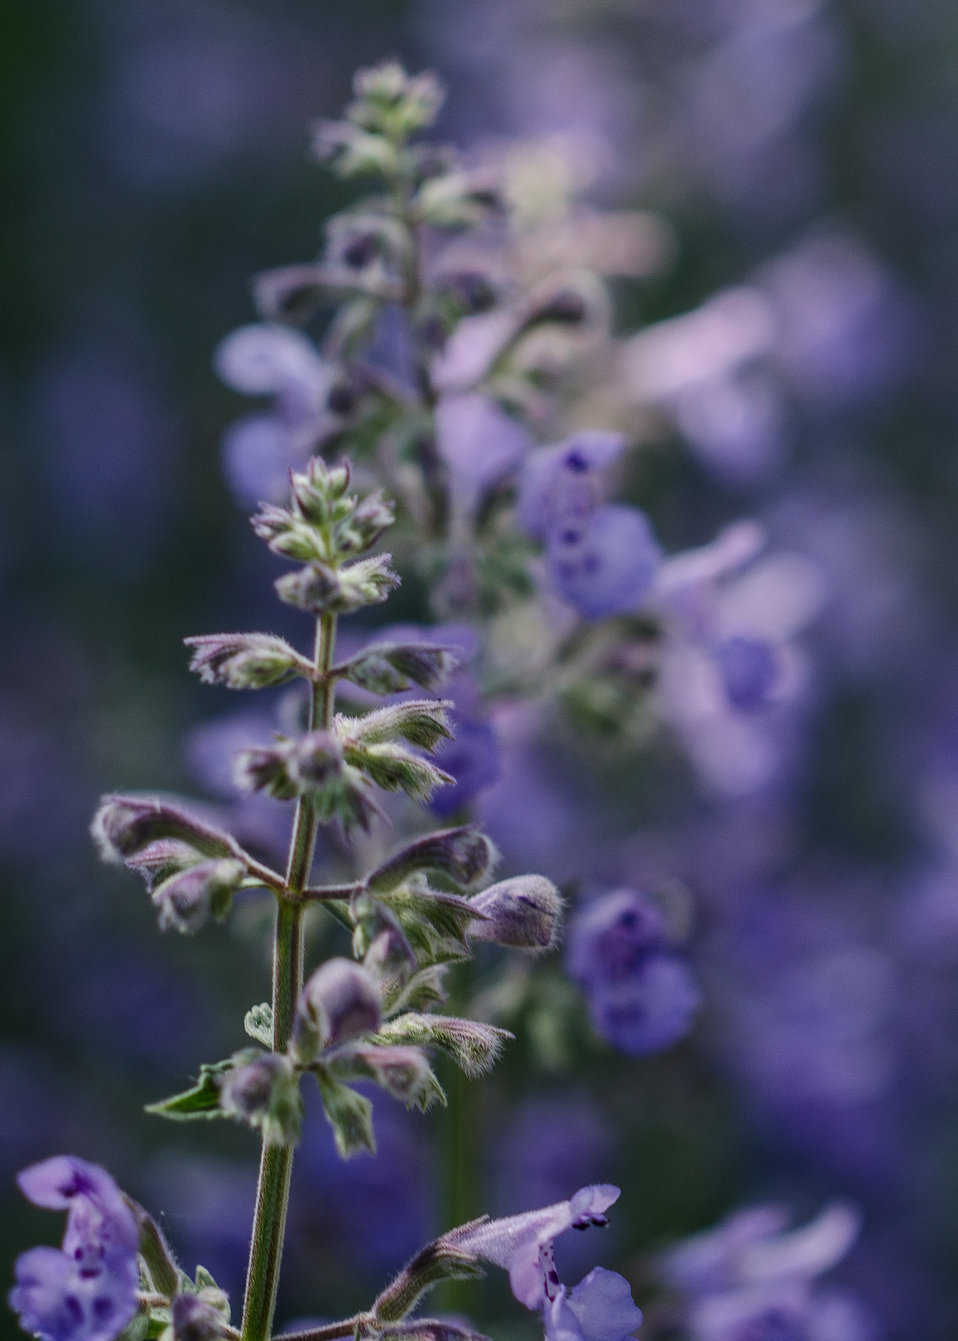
A honey bee is attracted to flowers in the U.S. Department of Agriculture People's Garden, outside the headquarters' Whitten Building in Washington, D.C., on Tuesday, May 21, 2013.This flower attracts bees because it provides nectar for the hive to feed on. Other plant in the garden have pollen that other bees will feed on. The bees gather pollen from many flowers and aide in pollination by moving from plant to plant.